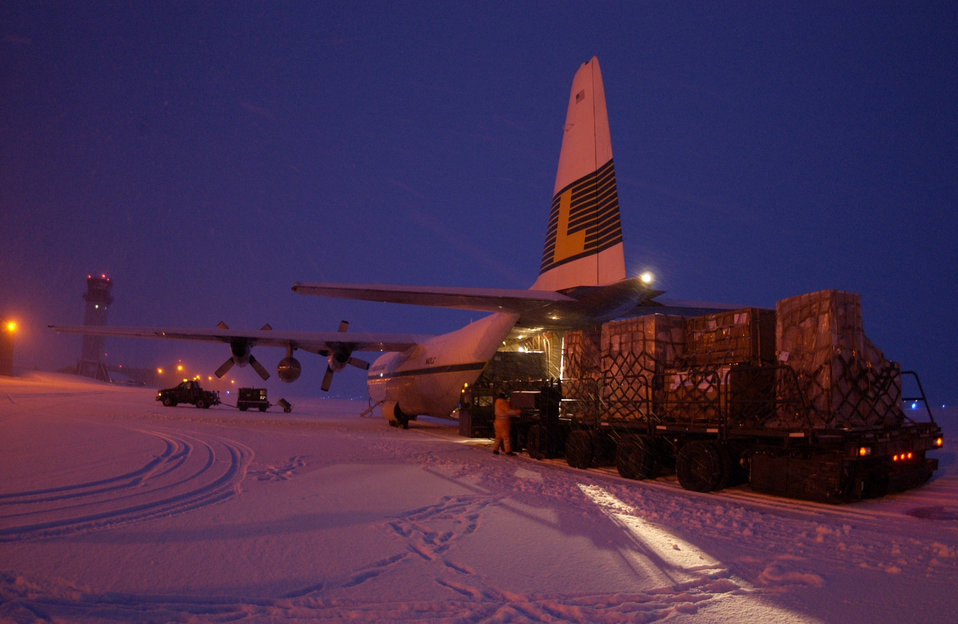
Life at Thule

Airmen unload supplies for the base Jan. 25 at Thule Air Base, Greenland. The supplies are flown in on a weekly contracted L-100 aircraft from McGuire Air Force Base, N.J.